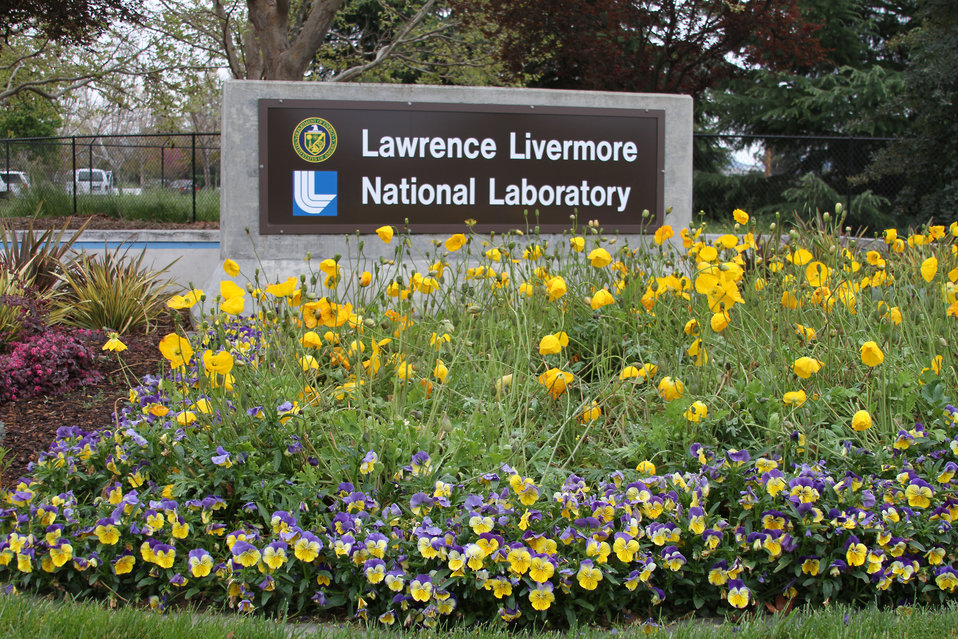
SIGN ENTRANCE TO LAWRENCE LIVERMORE NATIONAL LABORATORY IN LIVERMORE, CALIFORNIA.